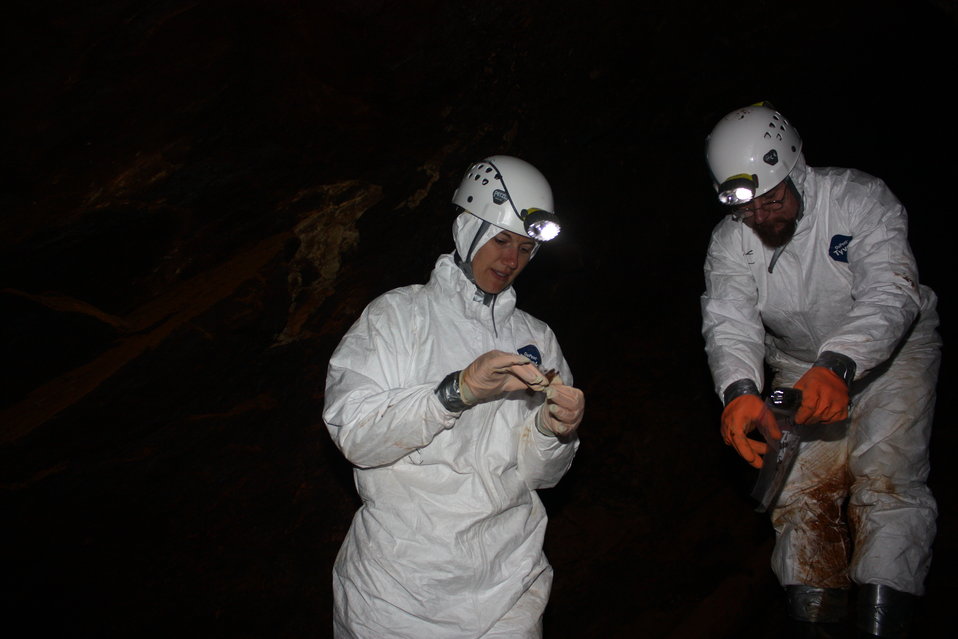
USFWS biologist Sue Cameron and NPS wildlife technician Rick Varner bagging dead bat